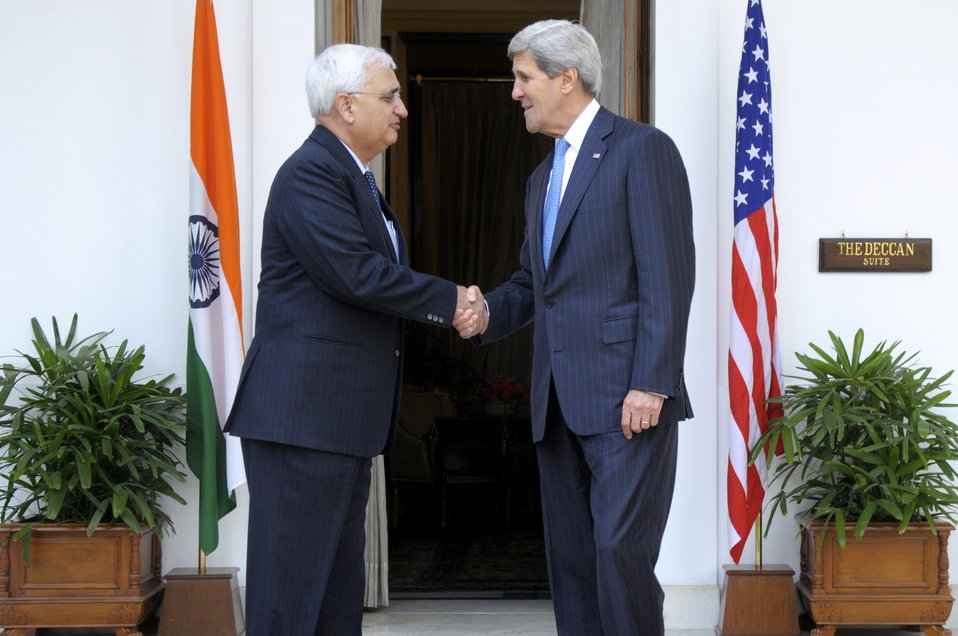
Secretary Kerry Shakes Hands With Indian External Affairs Minister Khurshid

U.S. Secretary of State John Kerry shakes hands with Indian External Affairs Minister Salman Khurshid before the U.S.-India Strategic Dialogue in New Delhi, India on June 24, 2013.